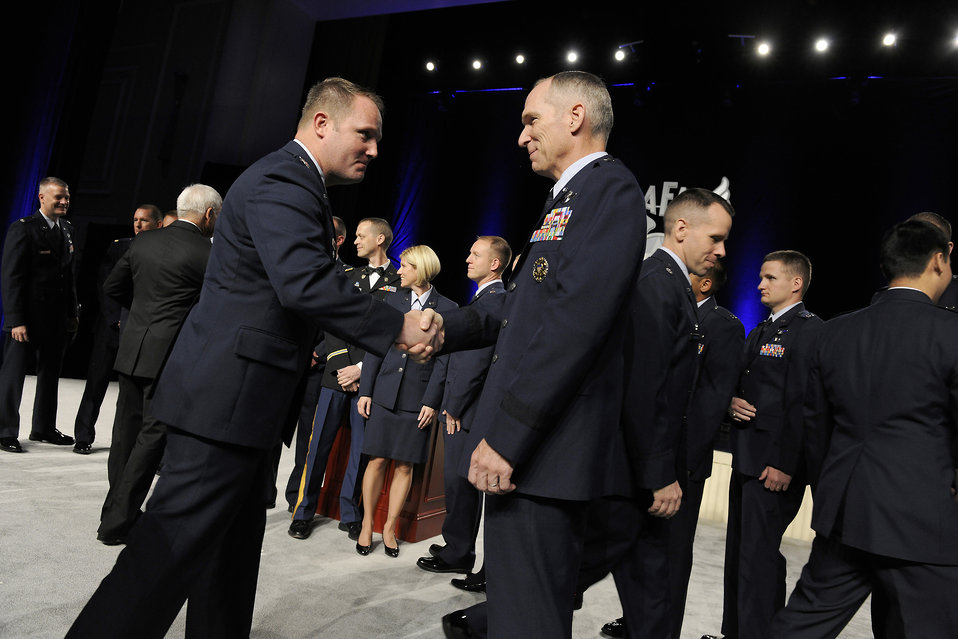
AFA conference kicks off

Gen. Michael Hostage congratulates an award recipient during the opening ceremonies of the Air Force Association's Air and Space Conference and Technology Exposition in Washington, D.C., Sept. 17, 2012. Hostage is commander of Air Combat Command.